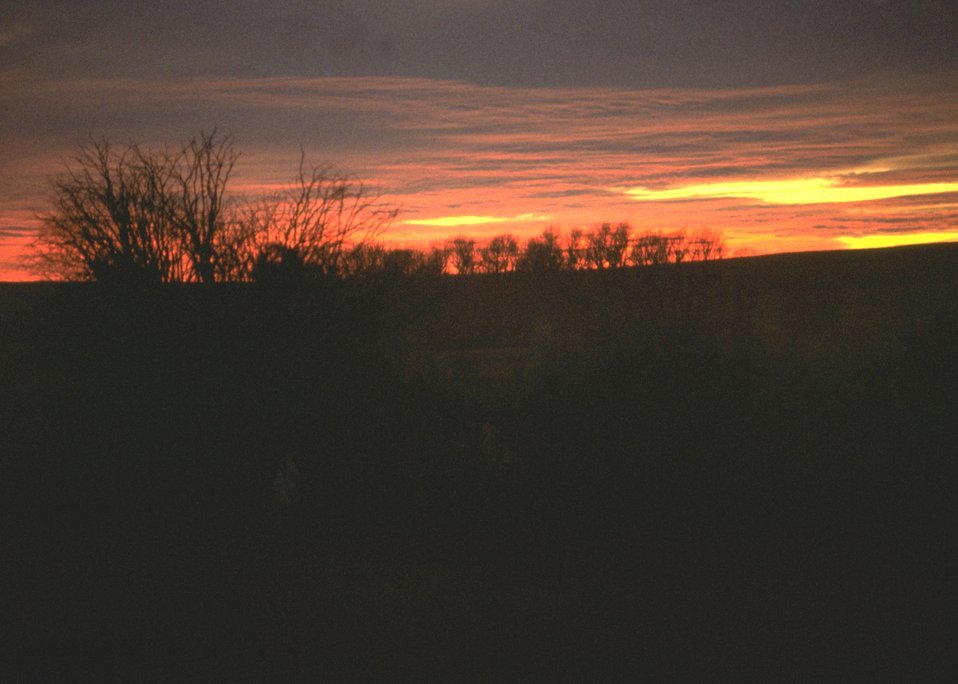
Sunset view.